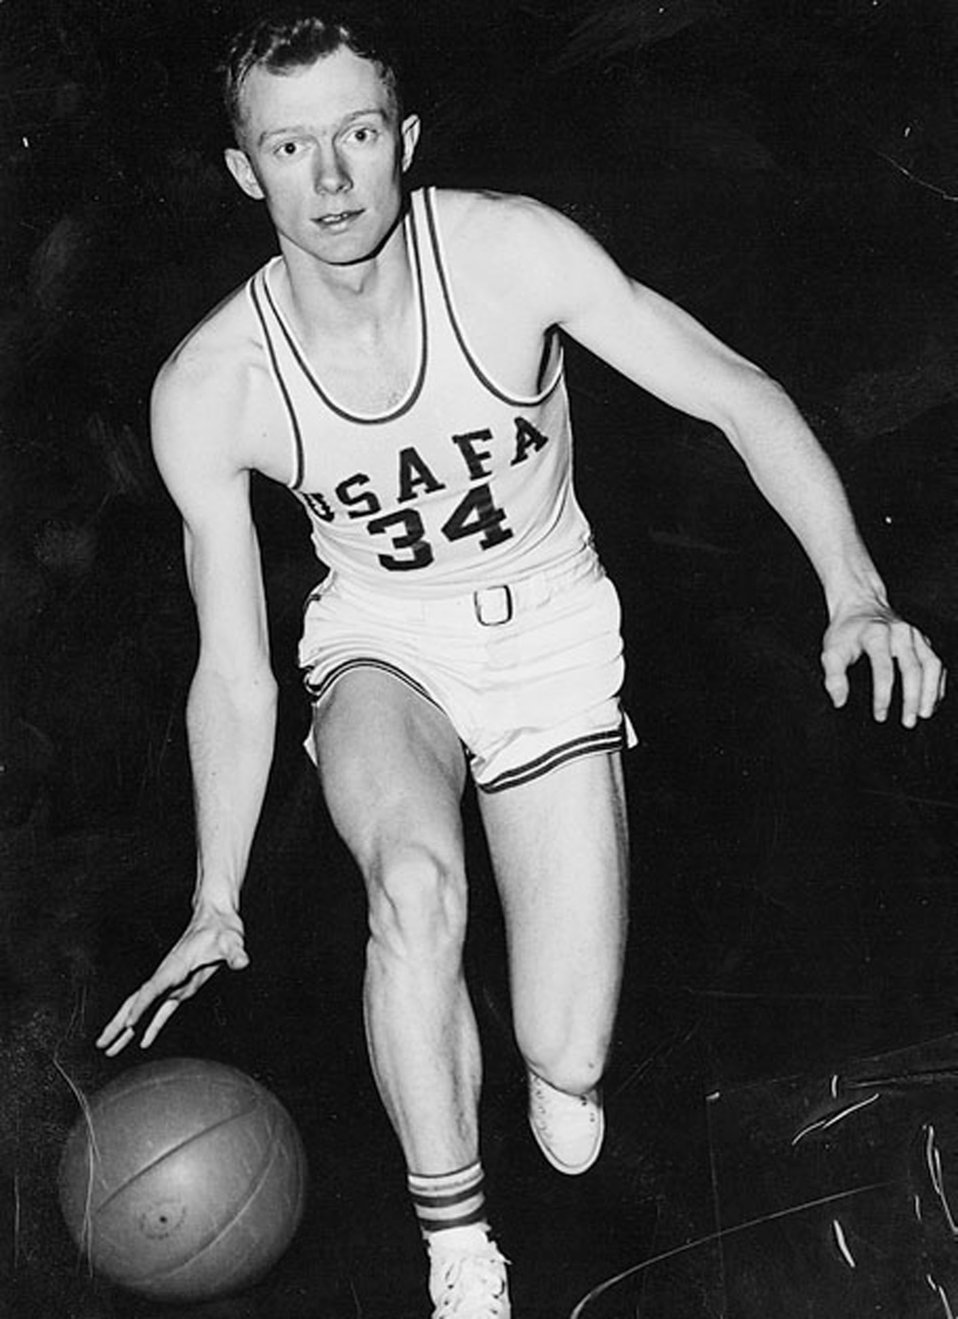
Academy announces inaugural class into athletic hall of fame

Retired Lt. Gen. Bob Beckel is in the inaugural class for induction into the Air Force Academy Athletic Hall of Fame. The 1959 academy graduate holds the school record for scoring average in a season at 22.8 points per game.